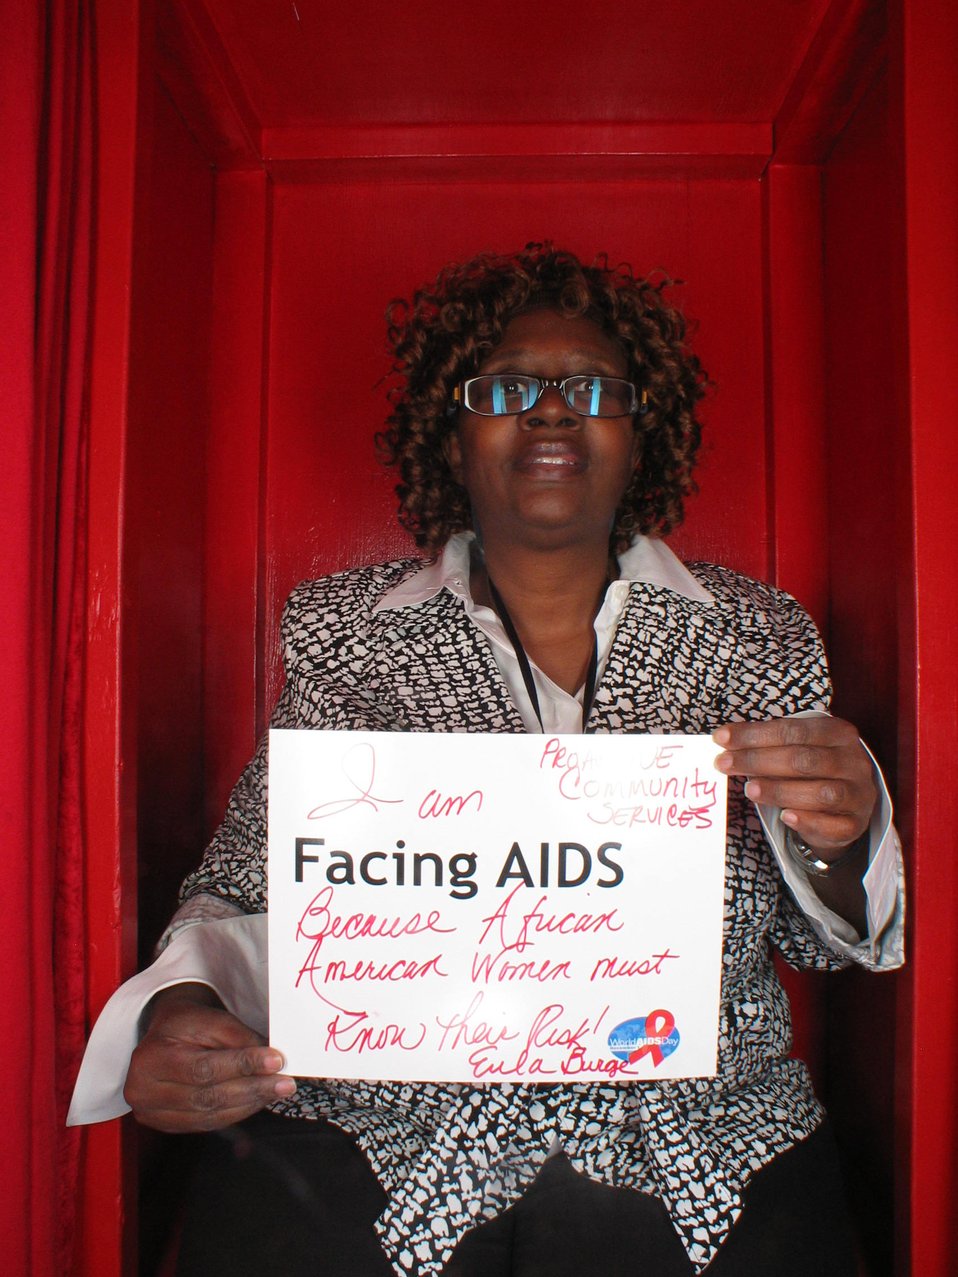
I am Facing AIDS because African American Women must know the risk!